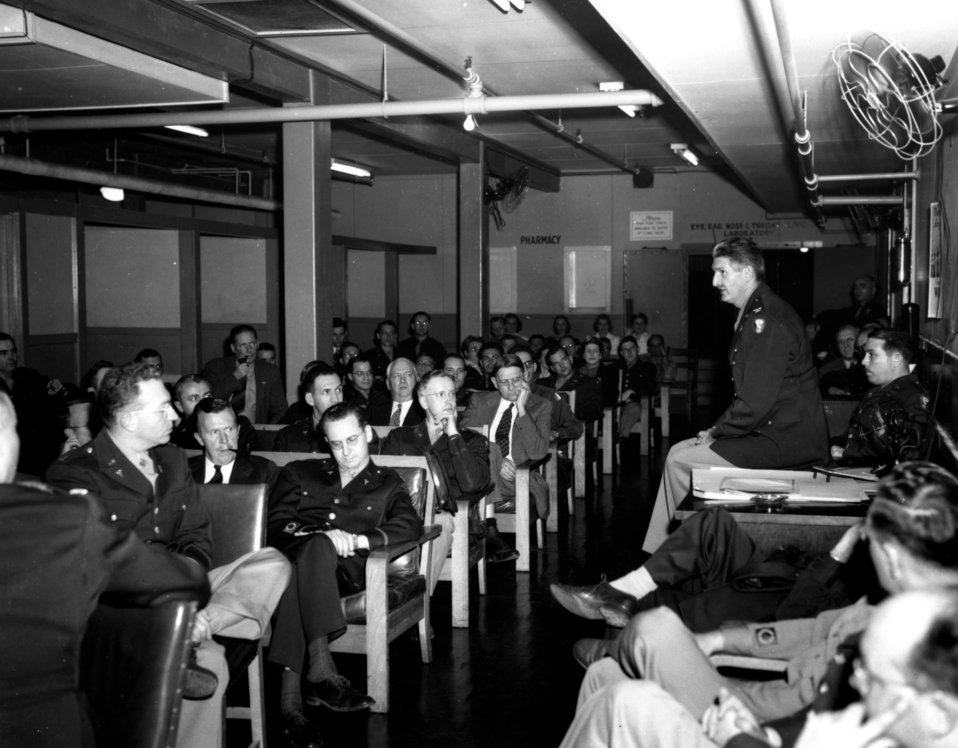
Army Activity at Oak Ridge